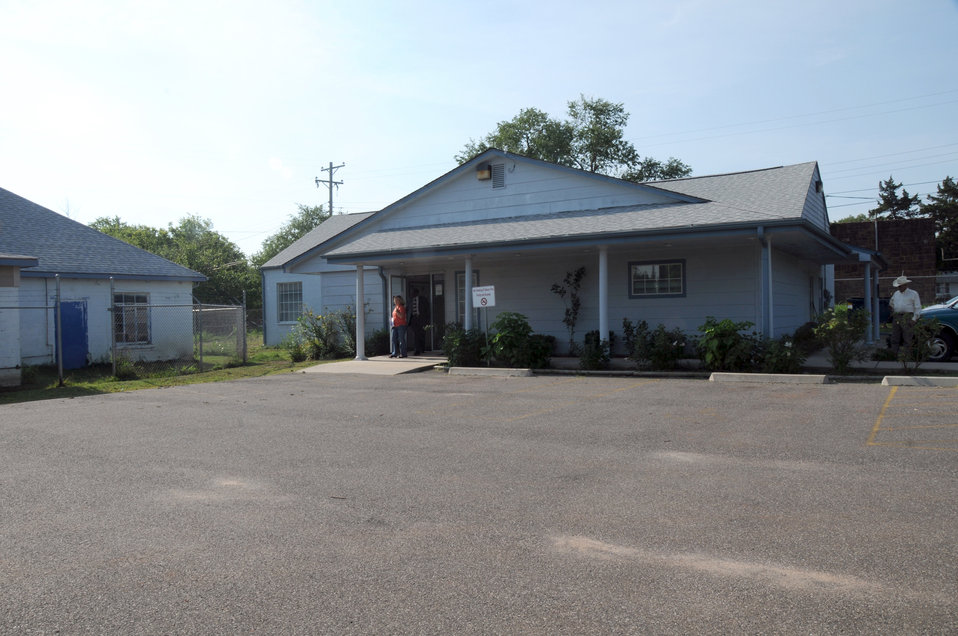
The Mary Mahoney Health Center located in Langston, Oklahoma on August 14, 2009. The clinic received loans through the American Recovery and Reinvestment Act (ARRA) provided to the U.S. Department of Agriculture (USDA) Rural Development (RD) Community Facilities Direct and Guaranteed Loans program. The loans are helping the clinic to expand its facilities and provided better health care to the local community.